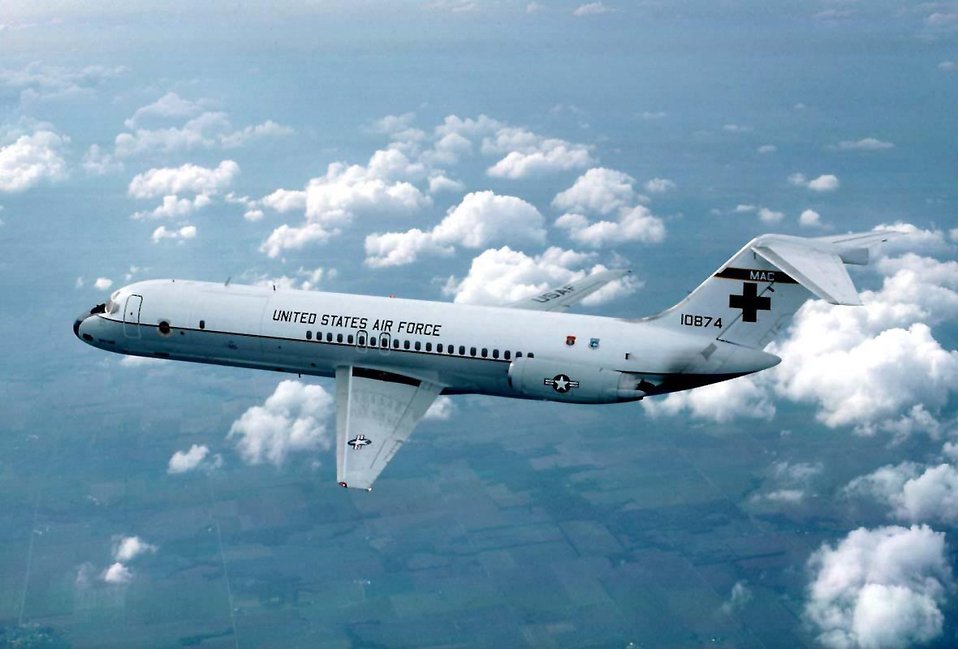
C-9

FILE PHOTO -- The C-9 is a twin-engine, T-tailed, medium-range, swept-wing jet aircraft used primarily for Air Mobility Command's aeromedical evacuation mission. The Nightingale is a modified version of the McDonnell Douglas Aircraft Corporation's DC-9. It is the only aircraft in the inventory specifically designed for the movement of litter and ambulatory patients. The C-9A's airlift capability to carry 40 litter patients, 40 ambulatory and four litter patients, or various combinations thereof, provides the flexibility for Air Mobility Command's worldwide aeromedical evacuation role. A hydraulically operated folding ramp allows efficient loading and unloading of litter patients and special medical equipment.